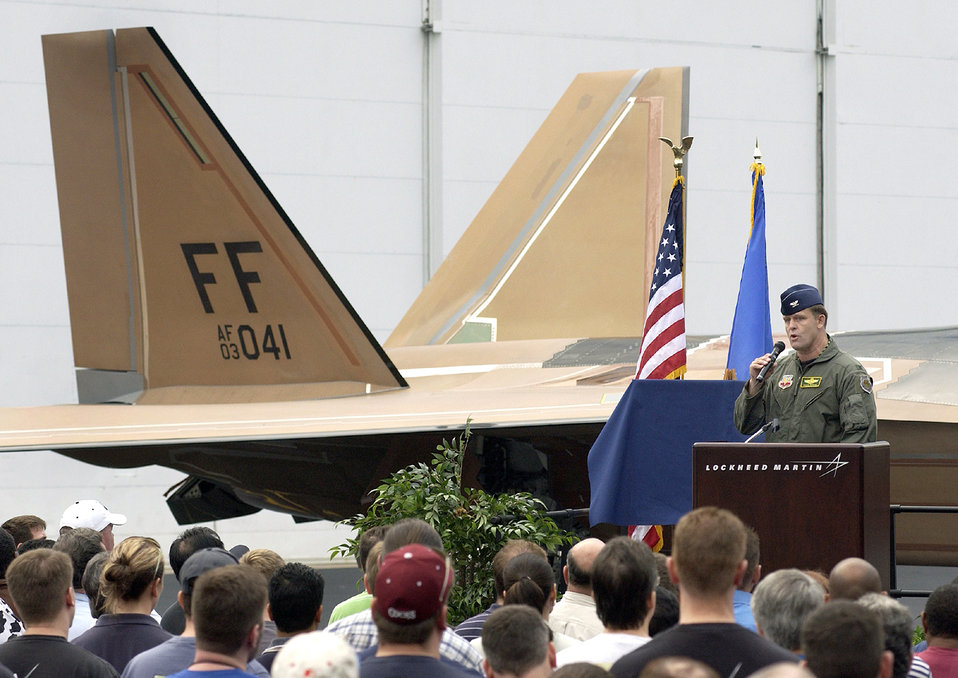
First operational F/A-22 rolls out

MARIETTA, Ga. -- Col. Frank Gorenc addresses the crowd at Lockheed Martin's F/A-22 Raptor factory here Oct. 27. He and other members of the 1st Fighter wing at Langley Air Force Base, Va., were here for the roll-out of wing's first operational Raptor. The aircraft will now undergo a modification process before arriving at the base in May. Colonel Gorenc is the 1st FW commander.